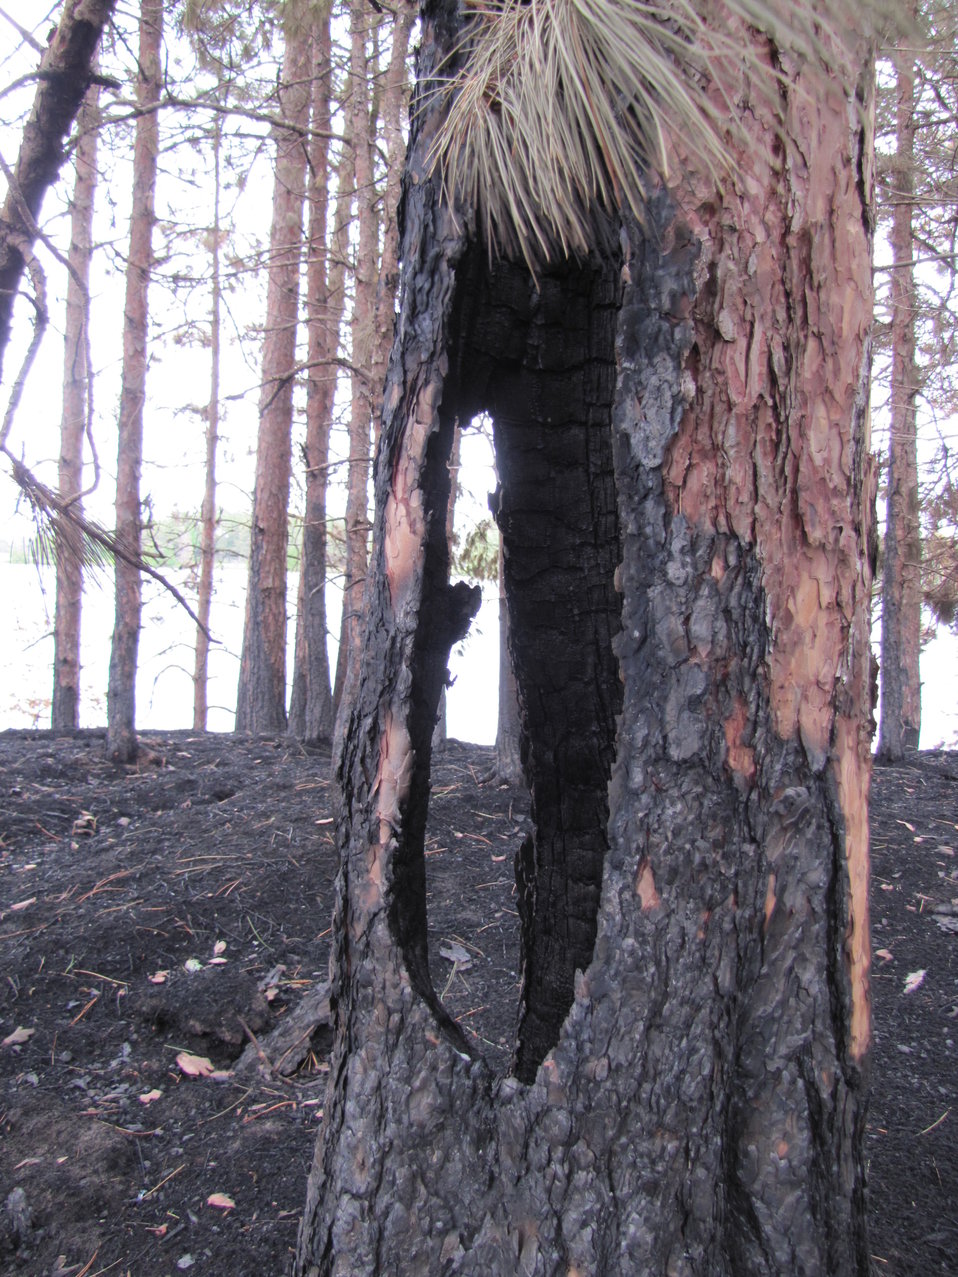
Fire Tree

This tree was burned out by the Pine Creek North Wildfire. It will be interesting to see if the tree survives or not. Fire acts as a natural disturbance that is able to rid forest of dead trees, burn debris on the forest floor, and revitalize forest for new growth.